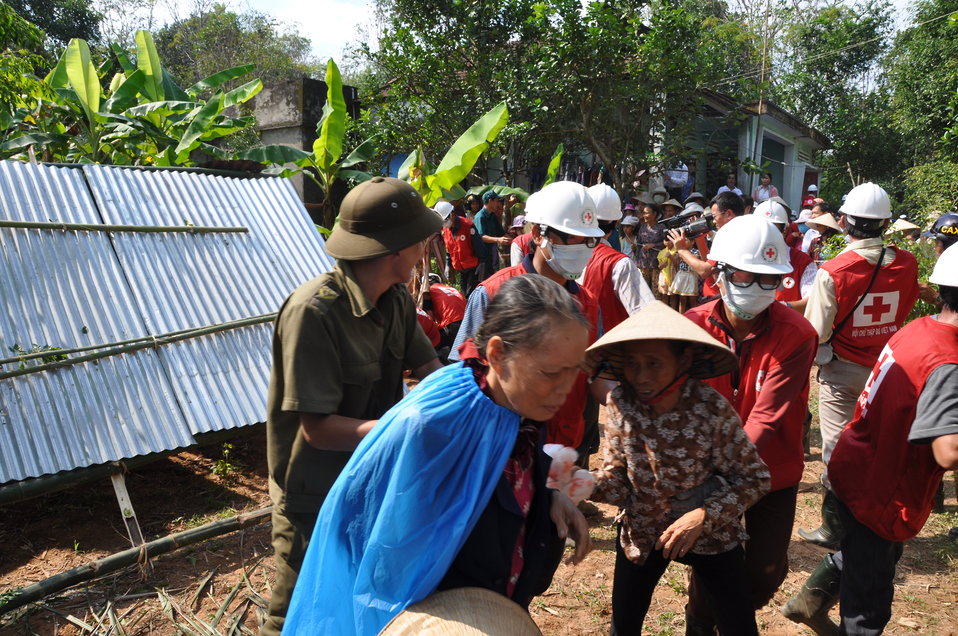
USAID, Red Cross Support Disaster Response Drill in Duy Hoa Commune, Quang Nam Province

Duy Hoa Commune, Quang Nam Province
December 5, 2012